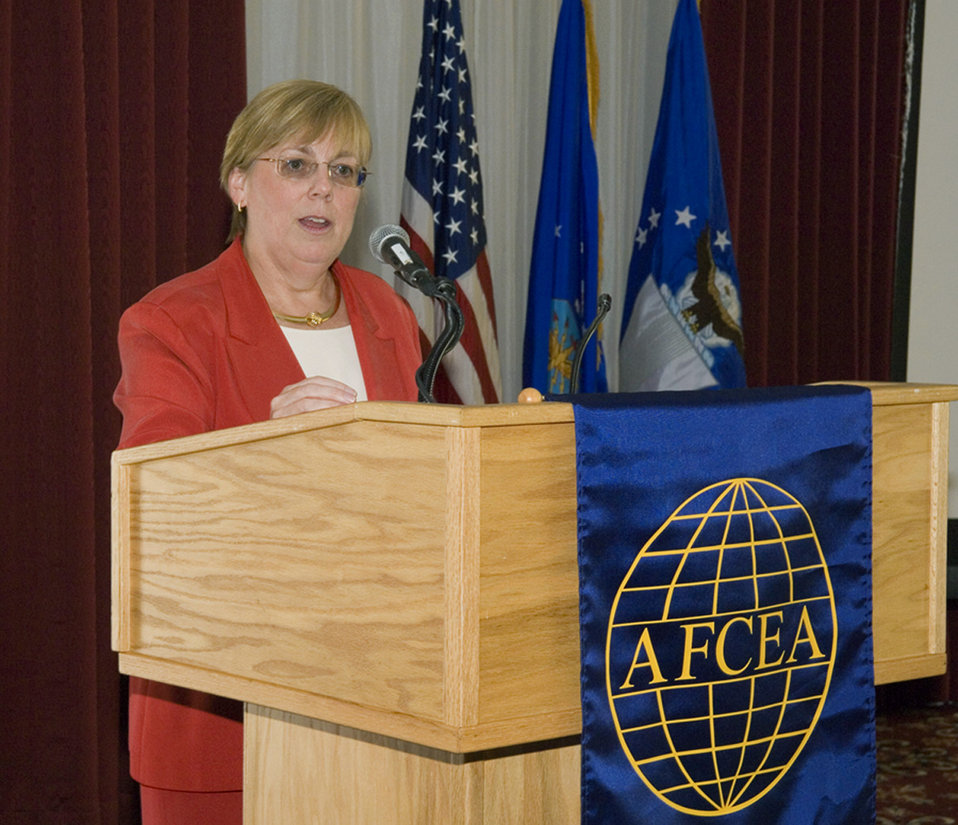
Acquisition official outlines challenges facing ISR community

Martha Evans speaks to a government-industry gathering at Hanscom Air Force Base, Mass., Sept. 11. Ms. Evans told the group that the Air Force is spending lots of money on C4ISR, and is looking for big results. Ms. Evans is the director for Information Dominance Programs within the Office of the Assistant Secretary of the Air Force for Acquisition.